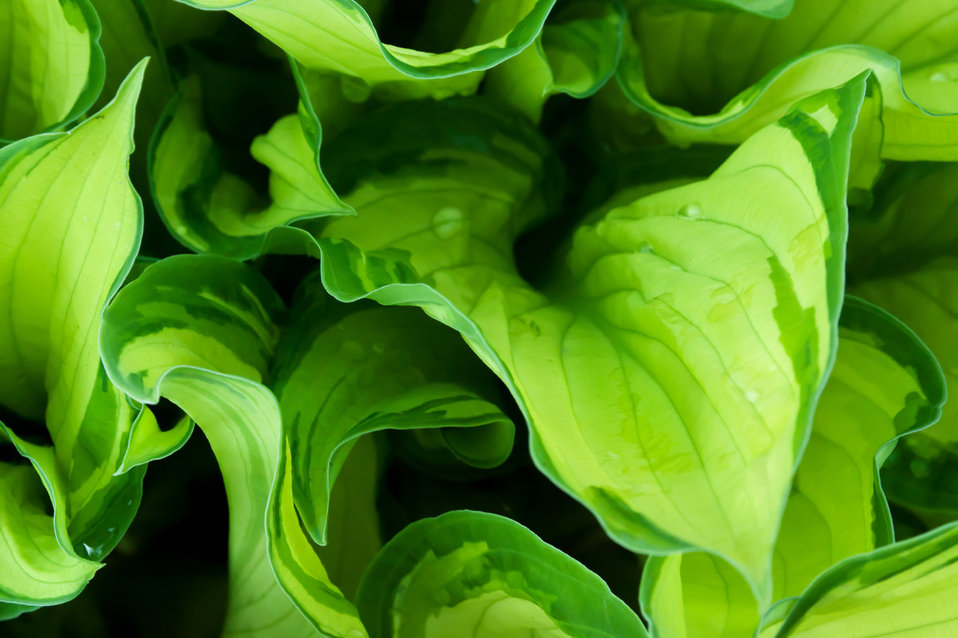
Wet green leaves wallpaper.